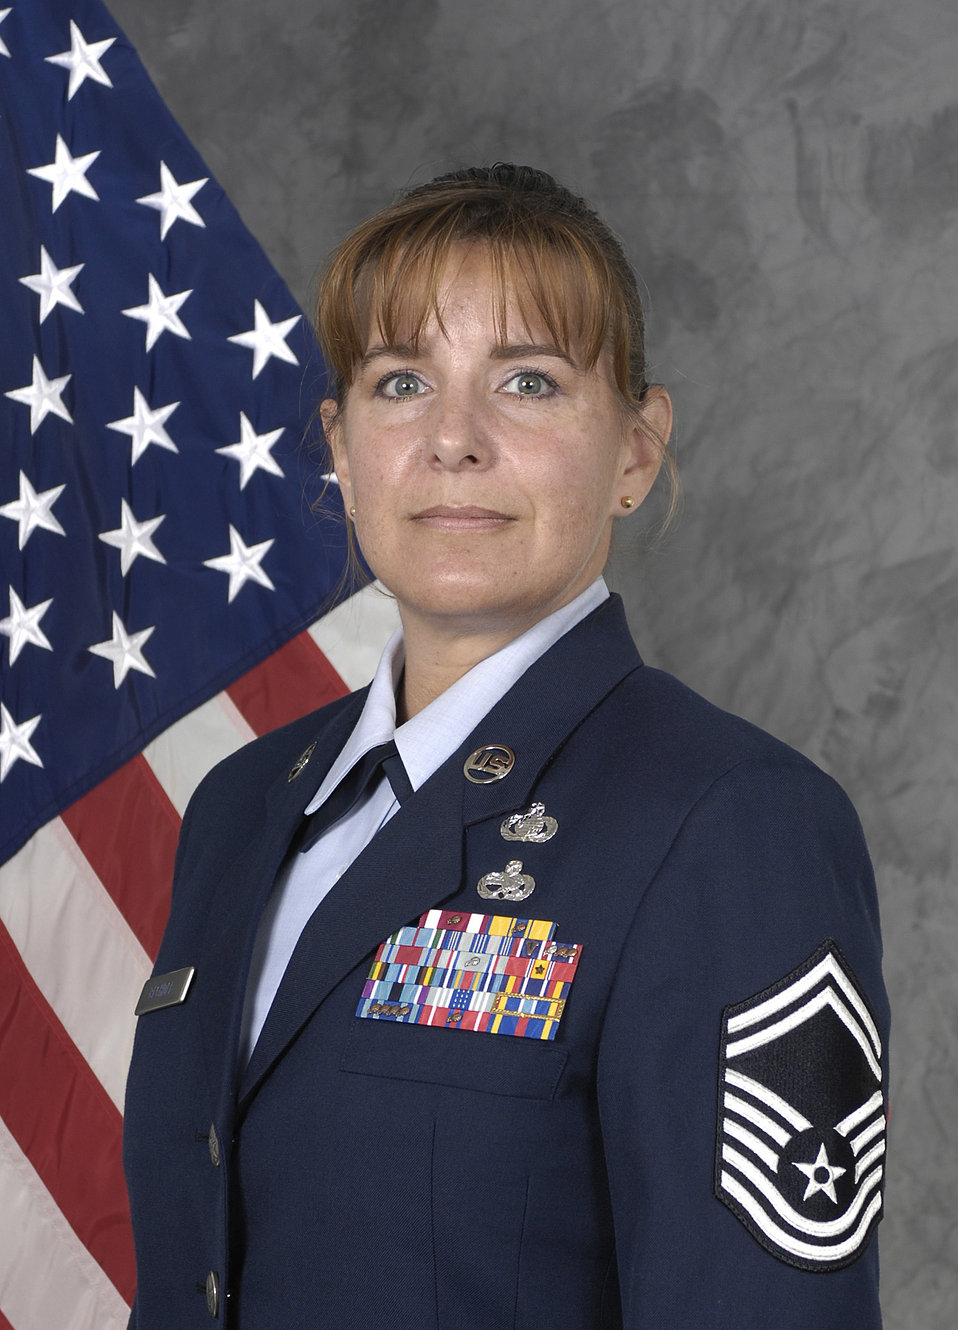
12 Outstanding Airmen of the Year named

Senior Master Sgt. Mary Bechdel, a former intelligence operations superintendent with the 13th Intelligence Squadron at Beale AFB, Calif., managed intelligence, surveillance and reconnaissance imaging for six combatant commands by leading 380 Airman in 24/7 operations using the Distributed Common Ground System-2. The 12 Outstanding Airmen of the Year are selected based on superior leadership, job performance, significant self-improvement/ personal achievements and base/community involvement. The Air Force Chief of Staff reviews the selections. The selections for the 2009 12 Outstanding Airmen of the Year were announced July 2 by Air Force officials at Randolph Air Force Base, Texas.